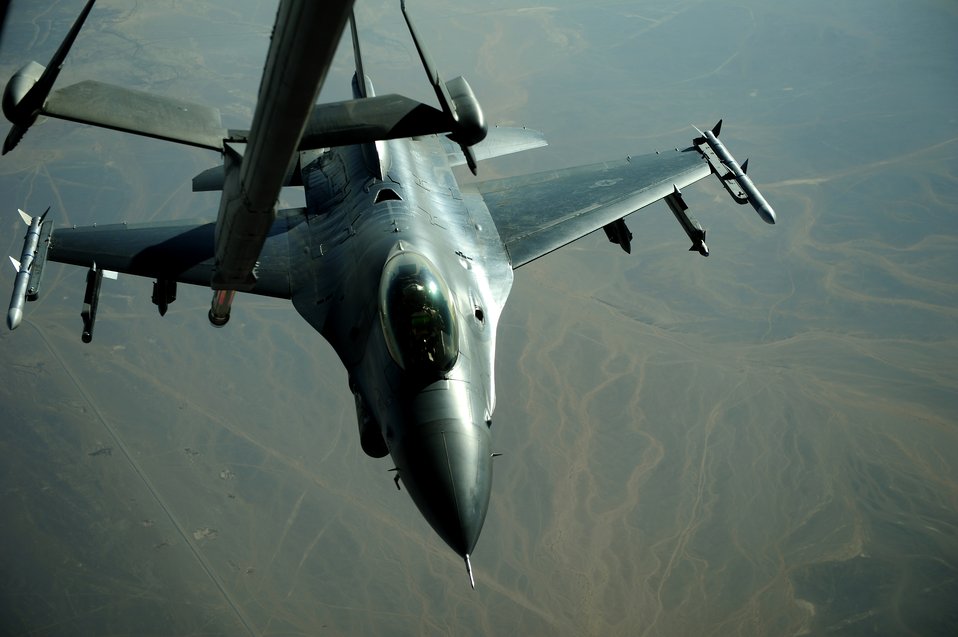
Eager Tiger

A U.S. Air Force F-16 Fighting Falcon aircraft with the 4th Fighter Squadron receives fuel as part of an air refueling mission over Jordan Oct. 17, 2011, during Eager Tiger Falcon Air Meet 2011. The Eager Tiger Falcon Air Meet is an annual competition and training exercise for countries that fly the F-16 Fighting Falcon aircraft.